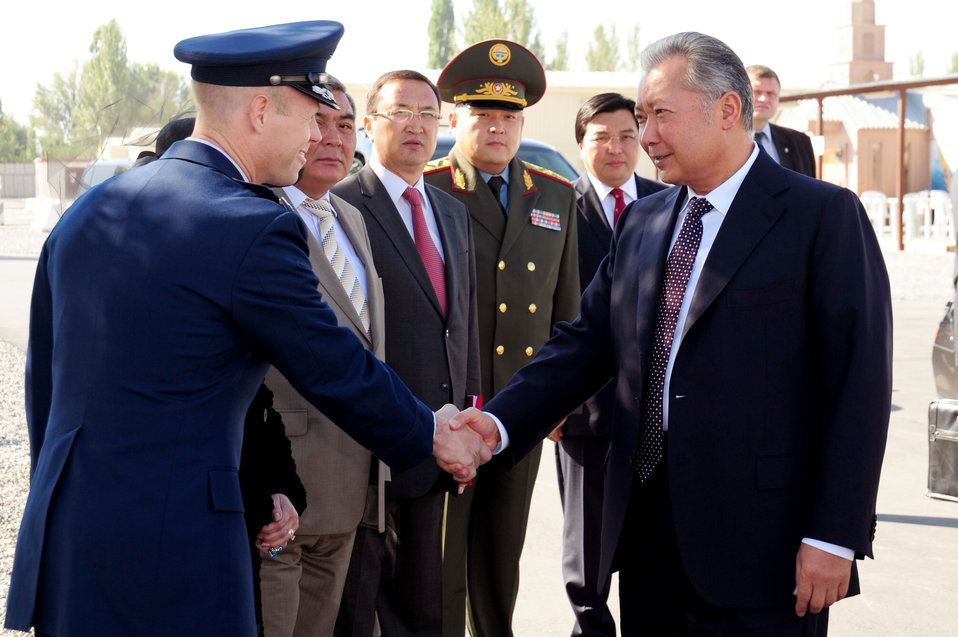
Deployed Airmen honor 9/11 with Kyrgyz president

Kyrgyz President Kurmanbek Bakiyev is welcomed by Col. Blaine Holt during a base visit Sept. 11, 2009, at the Transit Center at Manas, Kyrgyzstan. President Bakiyev honored those who lost their lives in 2001 with a wreath-laying ceremony and a few words of friendship between Kyrgyzstan and the U.S.